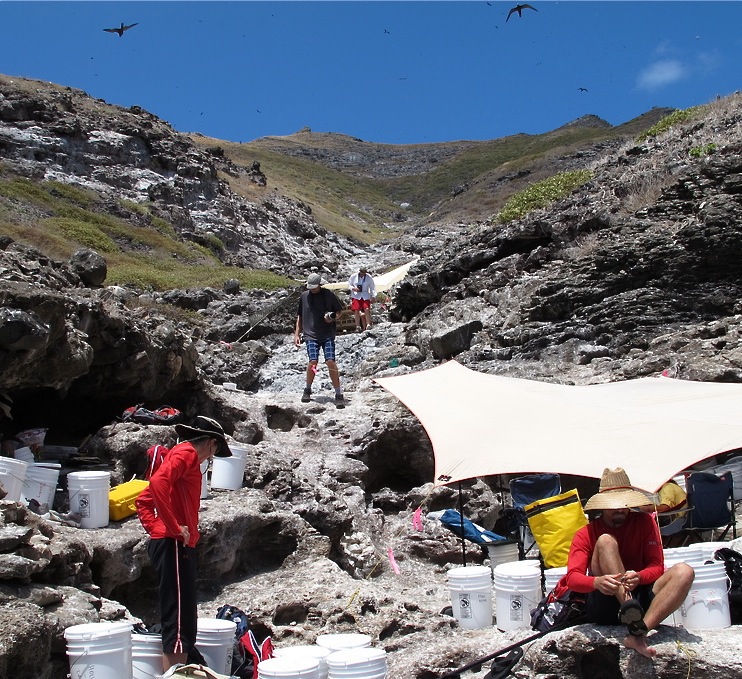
scientists camp

Nihoa Island
Sept. 4, 2011